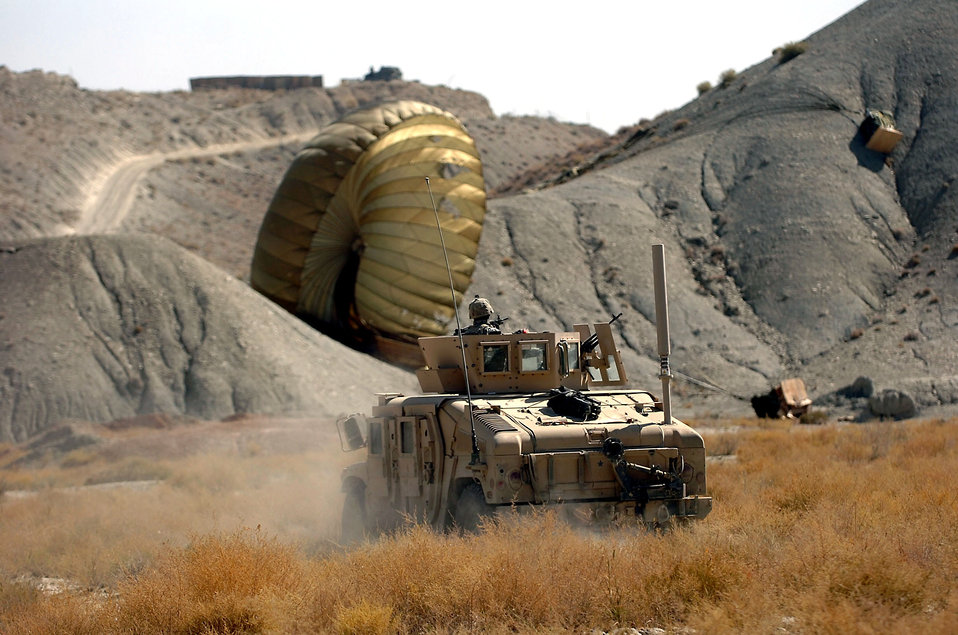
C-17 crews make record airdrop

An Army Humvee rushes to the landing site of a supply cargo bundle delivered by one of two C-17 Globemaster IIIs in Paktika Province, Afghanistan, October 11. The air supply drop was the largest in Operation Enduring Freedom history.